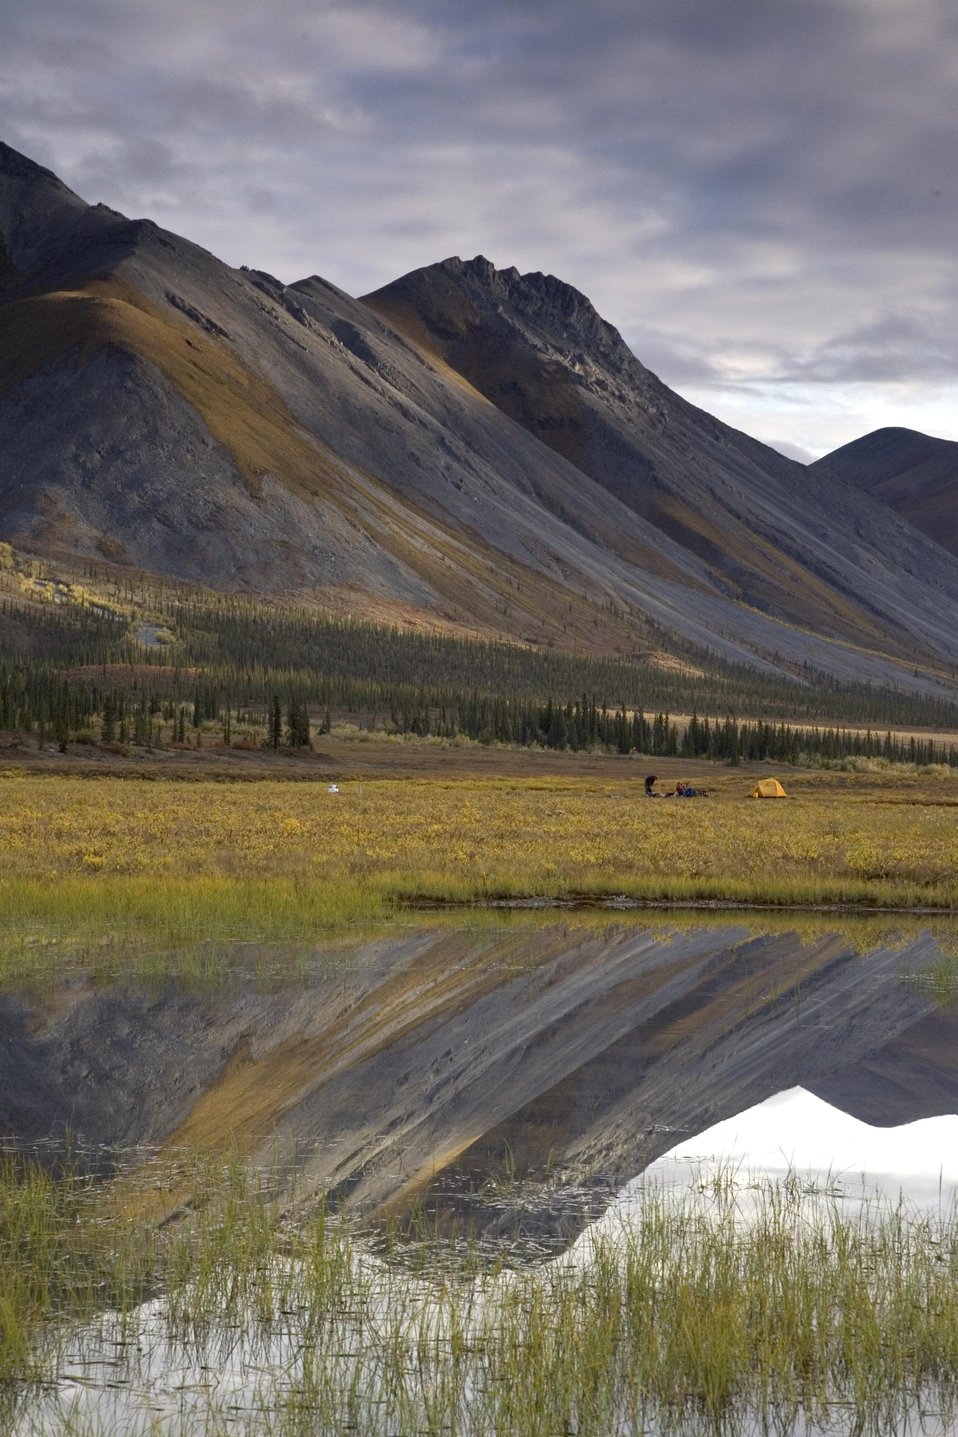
Arctic National Wildlife Refuge